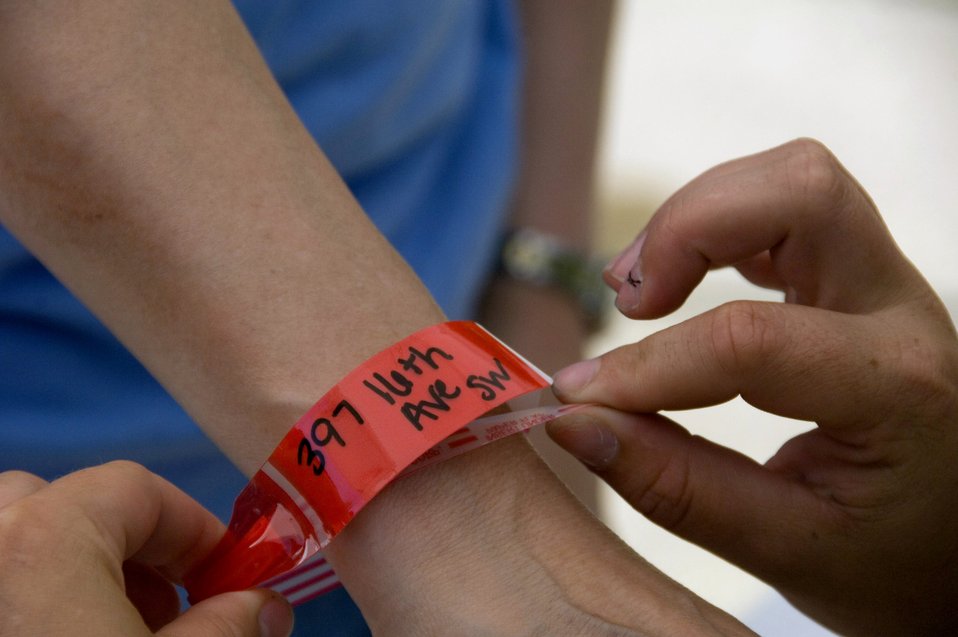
Air National Guard shores up as flood recedes

Cedar Rapids, Iowa, residents receiving approval to return to their homes are given a colored wristband to identify them. Residents are allowed to return to their homes during designated times to recover personal items and valuables.